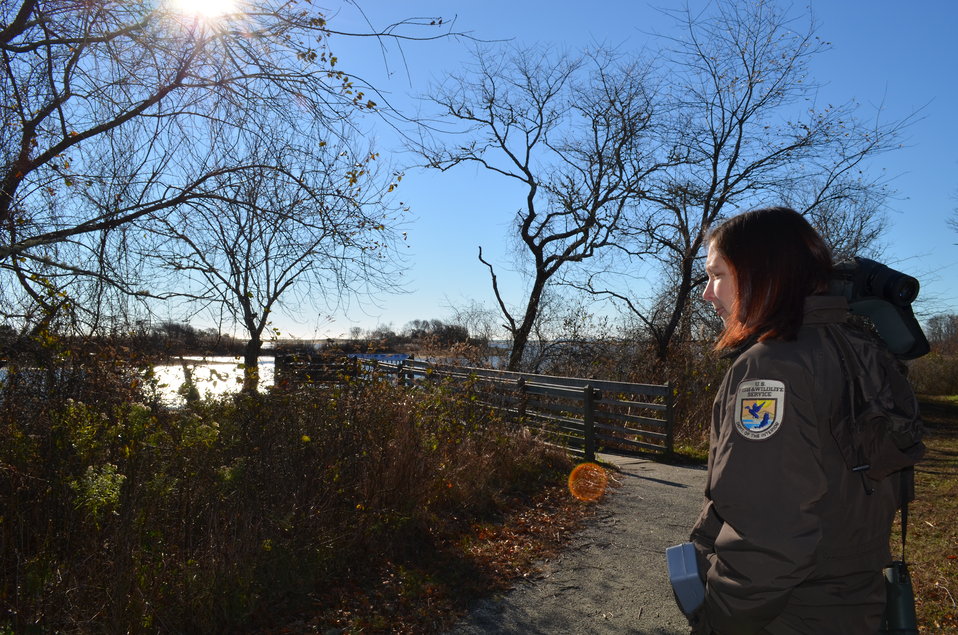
Approaching the lookout (RI)

Wildlife biologist with Rhode Island National Wildlife Refuge Complex Rhonda Smith pauses on the walkway before making her way to the lookout point to see the full extent of the transformation occuring at Trustom Pond.